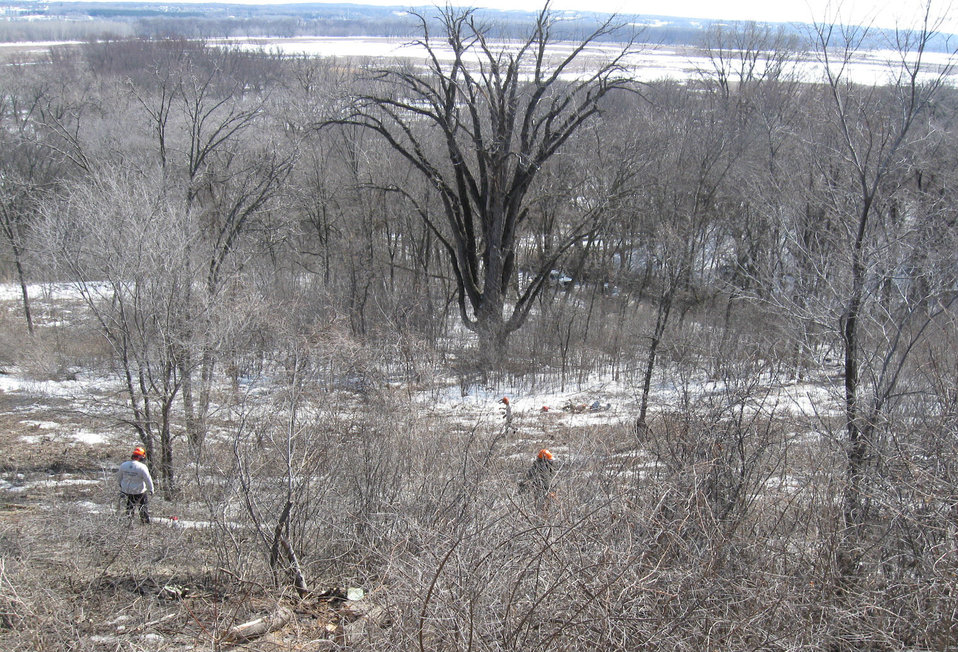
Brush Clearing

Before: The crew clears brush from an area near Long Meadow Lake.